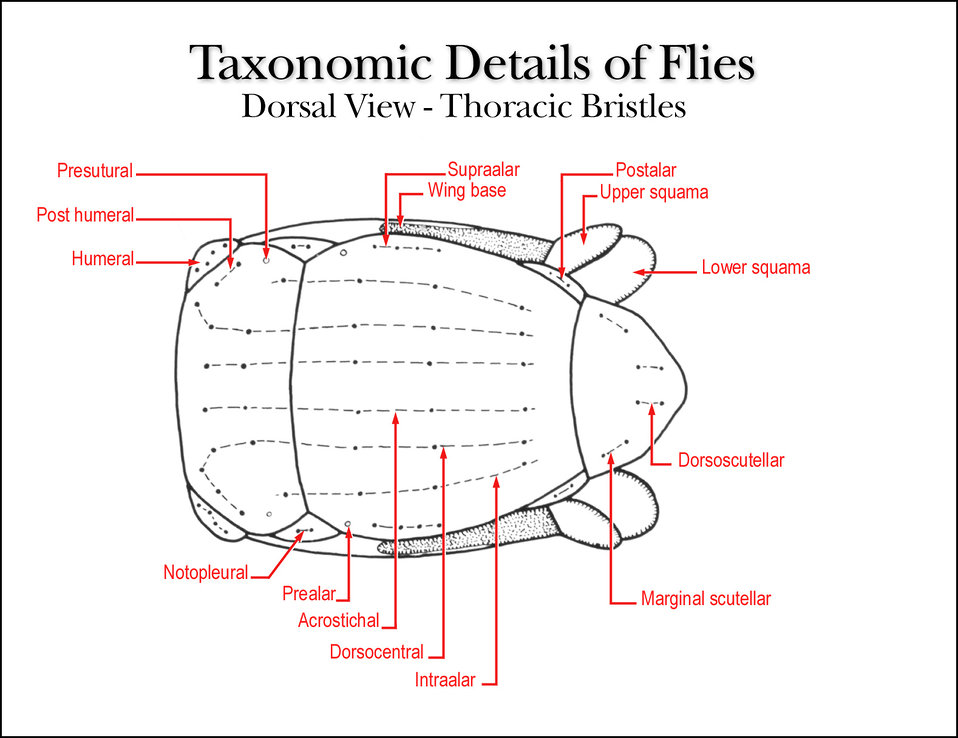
This illustration shows the lateral view of a fly's thorax comprised of thoracic exoskeletal plates and bristles.